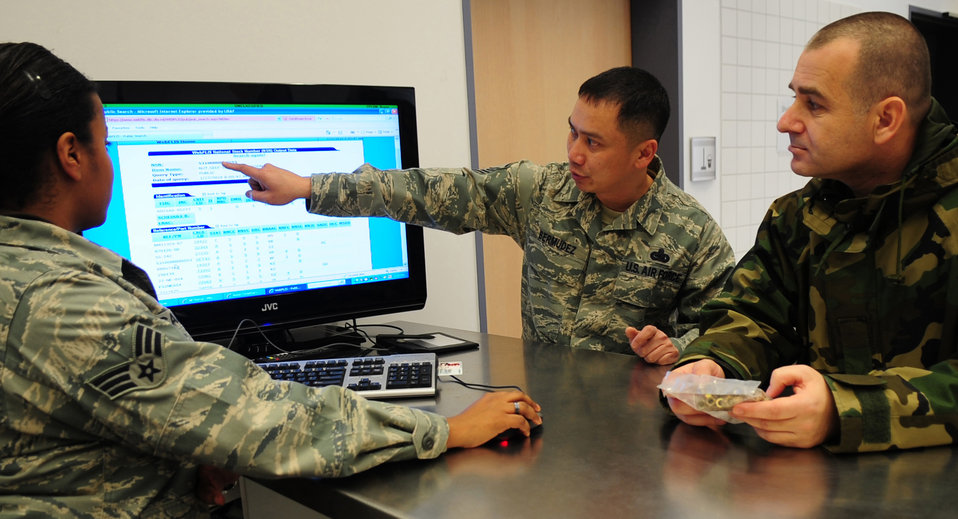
Macedonian officials visit Ramstein to advance partnerships, integration

Master Sgt. Arthur Bermudez shows Republic of Macedonia army Maj. Ljupce Gorgievski the aircraft parts tracking system Jan. 27, 2010, at Ramstein Air Base, Germany. Sergeant Bermudez is a 86th Maintenance Squadron section chief with the aircraft parts store.